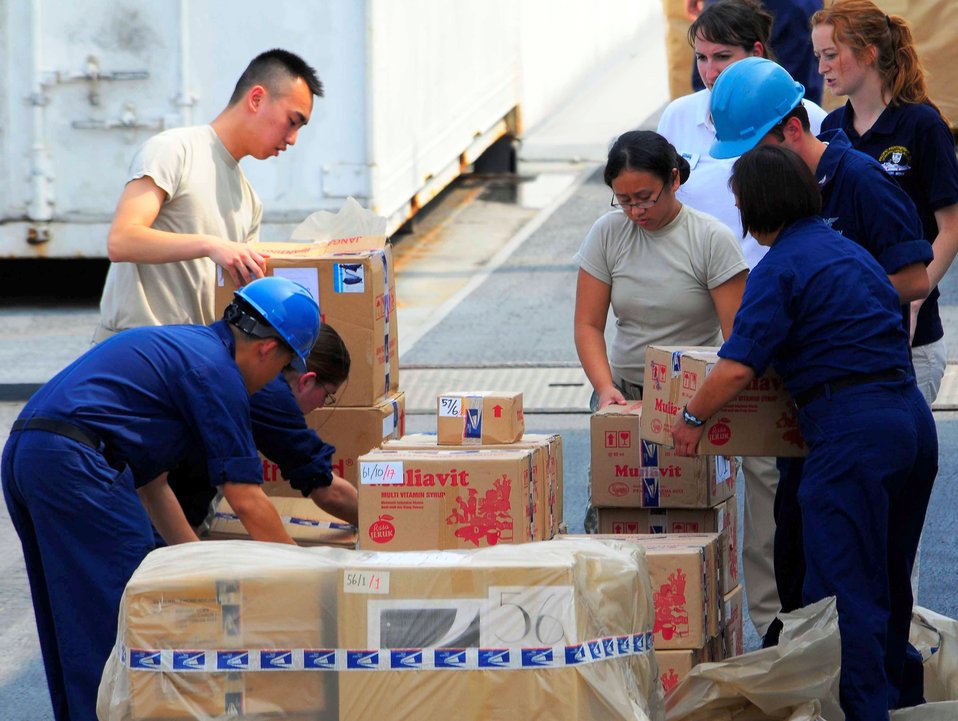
Sailors and NGO Volunteers Strip a Pallet of Medical Supplies

Sailors and non-governmental organization volunteers assigned to the Military Sealift Command hospital ship USNS Mercy (T-AH 19) strip a pallet of medical supplies on the flight deck during a stores unload in support of Pacific Partnership 2010 on July 7, 2010. Mercy is en route to Indonesia during the fifth in a series of annual U.S. Pacific Fleet humanitarian and civic assistance endeavors to strengthen regional partnerships.